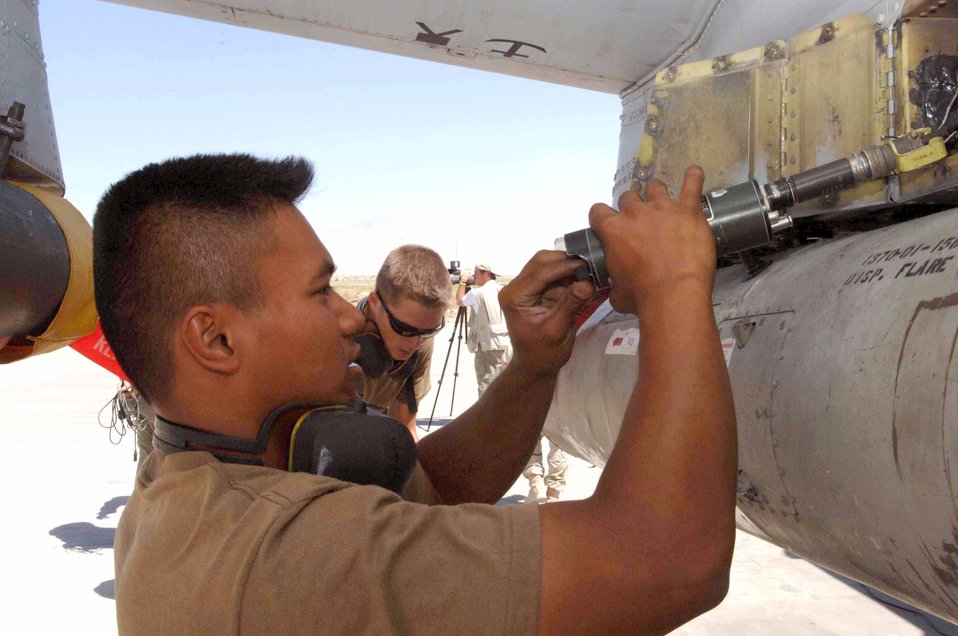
Thunderbolt maintenance

BAGRAM AIR BASE, Afghanistan -- Airman 1st Class Kelly King checks the volts on an A-10 Thunderbolt II. He is a weapons loader with the 455th Expeditionary Aircraft Maintenance Squadron here and is deployed from Pope Air Force Base, N.C.